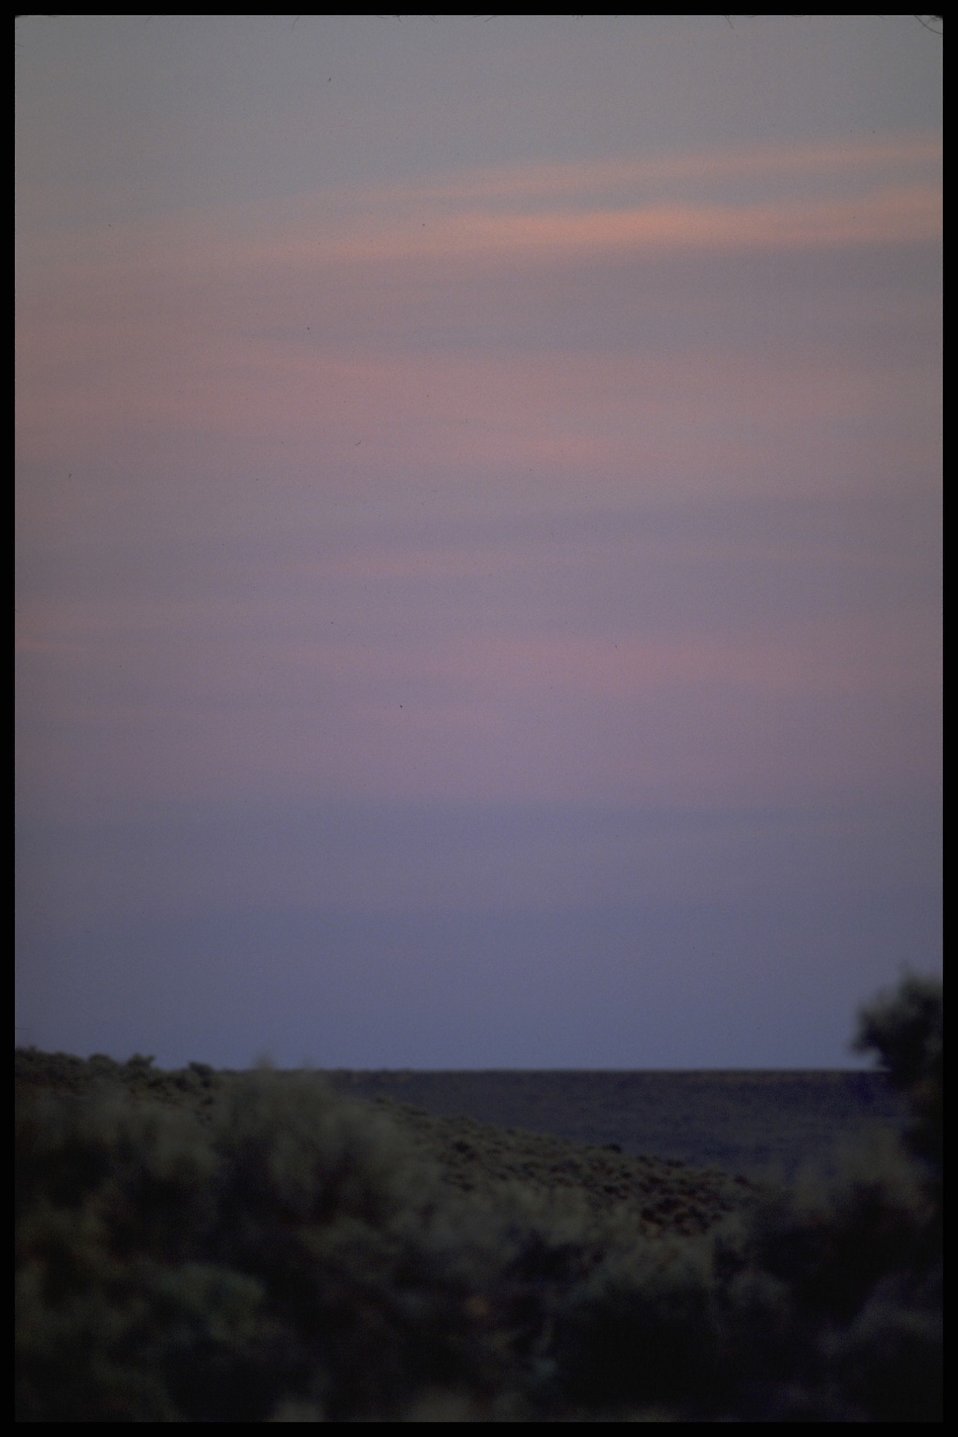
Lakeview District sunrise.